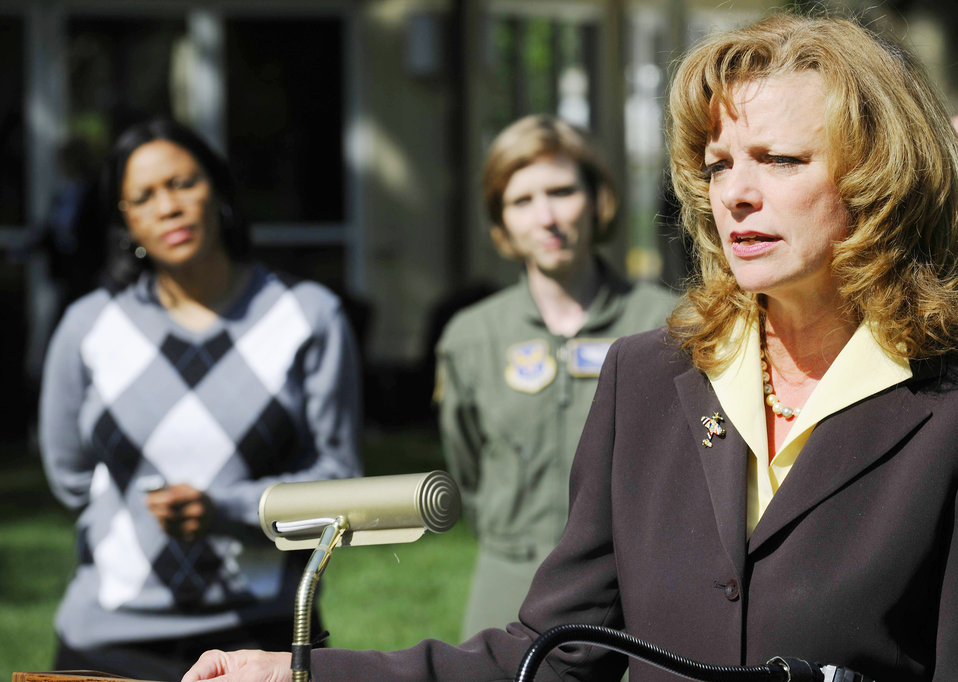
Pentagon officials join Air Force bases for '40 trees in 40 communities' tree planting

Debra Tune addresses spectators during